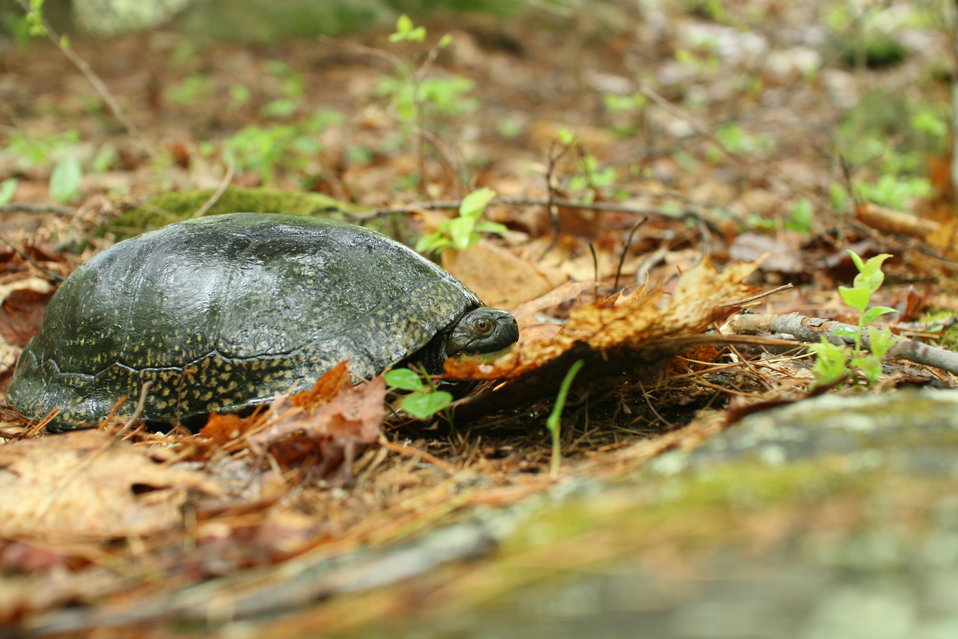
Blanding's turtle at New Boston Air Force Base